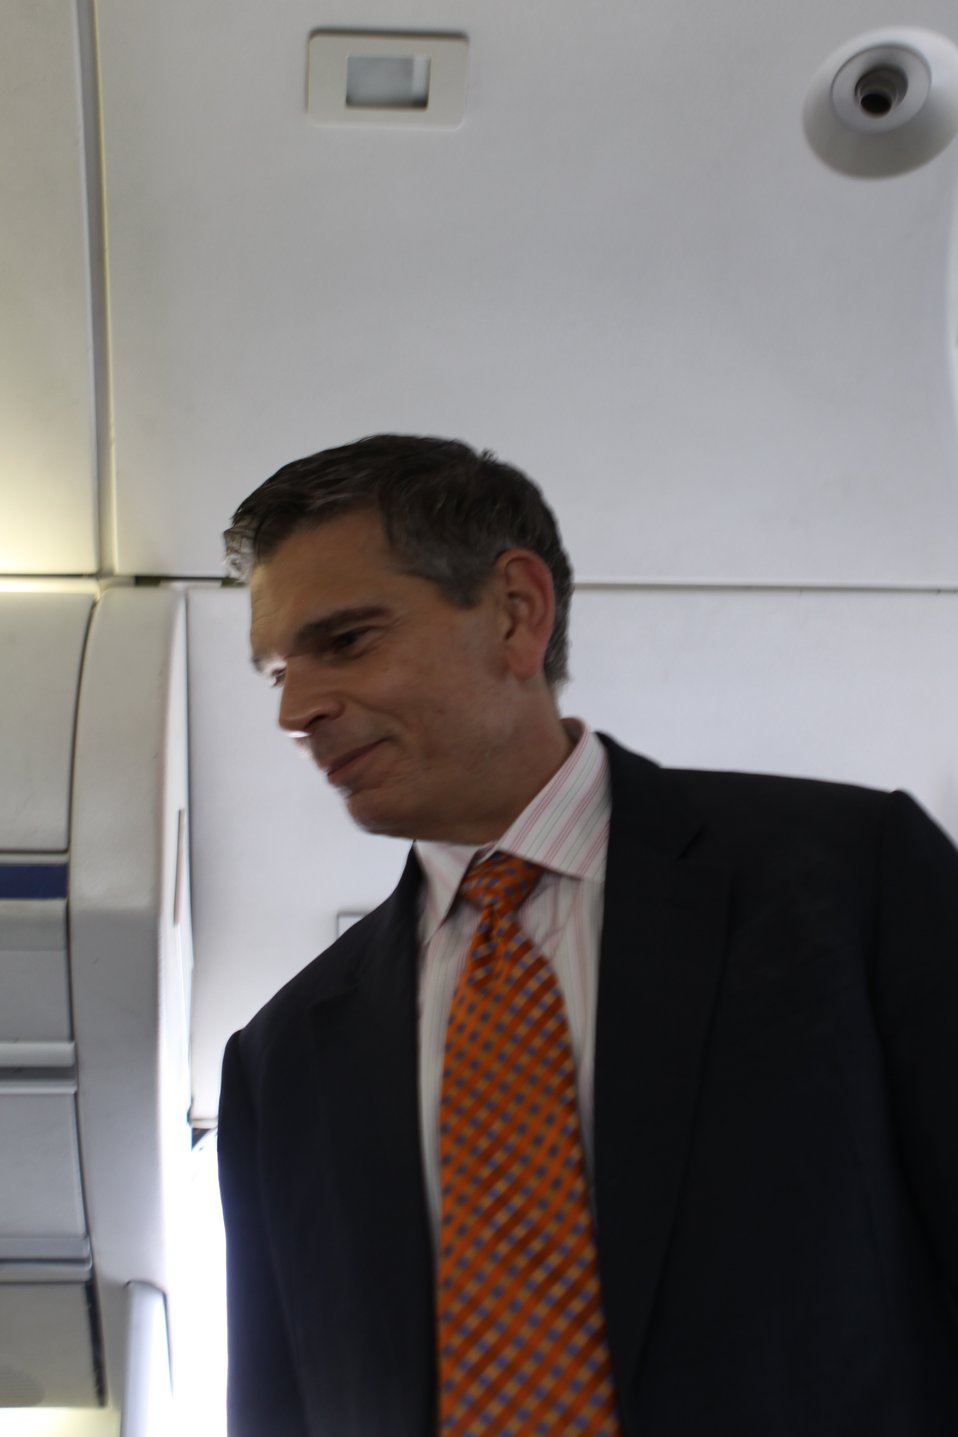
100525 Hirat Marble Conference 009